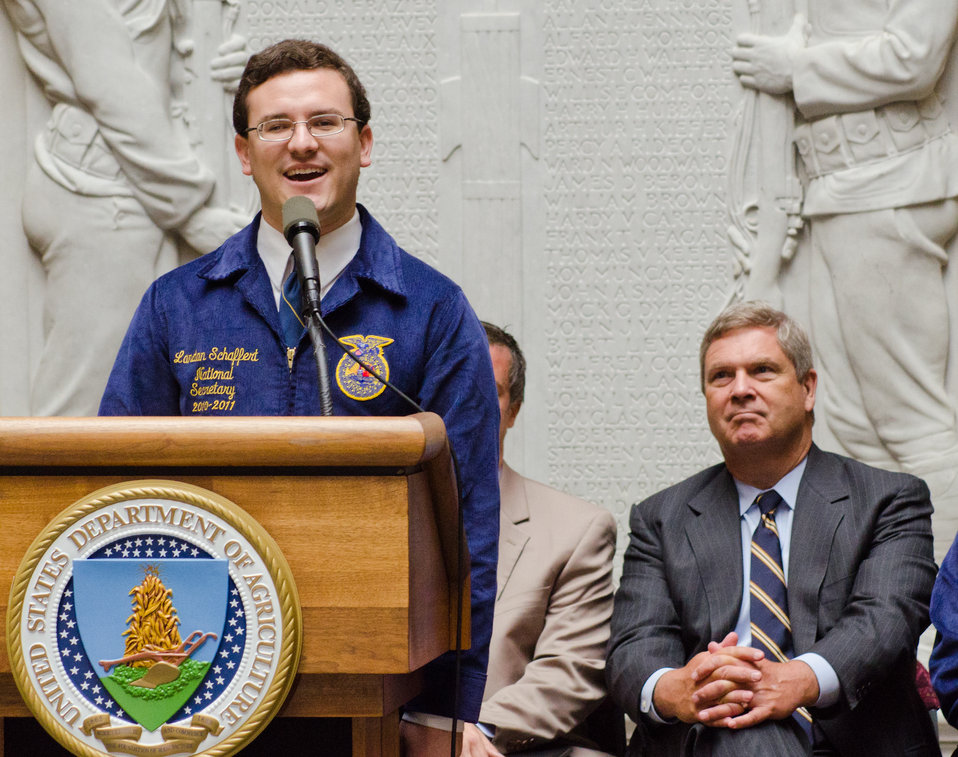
Future Farmers of America (FFA) National Secretary Landan Scheffert introduces Agriculture Secretary Tom Vilsack to FFA leadership at the U.S. Department of Agriculture in Washington, DC, on Thursday, July 28, 2011.